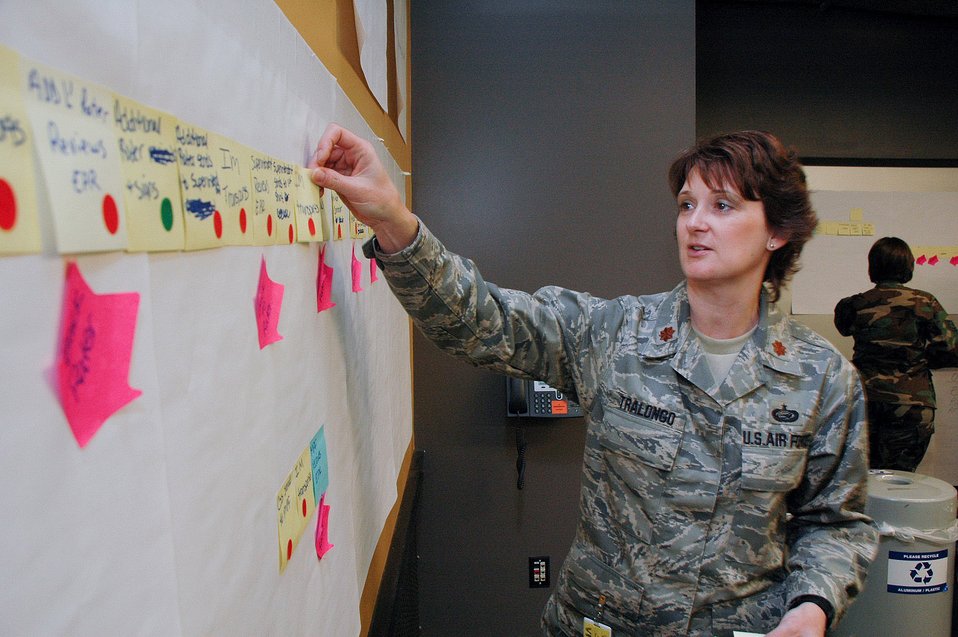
Guard, Harley-Davidson join forces to improve processes

Maj. Caressa Tralongo maps out each step of a job during the value-stream mapping portion of the Air Force Smart Operations for the 21st century facilitator training: Training the trainers May 7 at Harley-Davidson University in Milwaukee. Major Tralongo is the 128th Mission Support Flight commander from the Wisconsin Air National Guard.